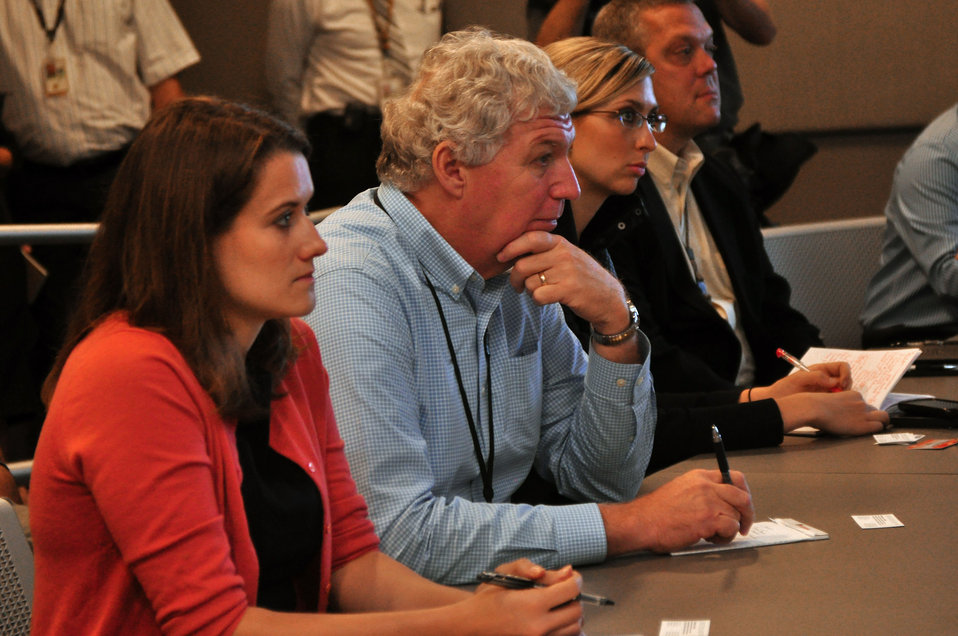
Richard Serino Deputy Administrator, FEMA Visit to Oak Ridge 2013

13-116-64 DOE photo Lynn Freeny 9-26-2013 Oak Ridge Tennessee